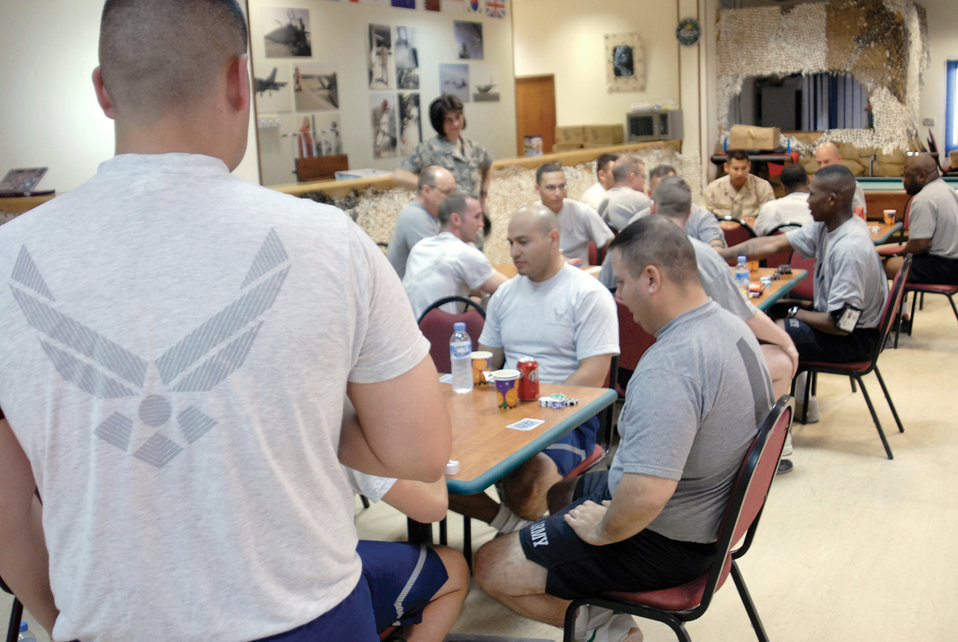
Medics, volunteers help servicemembers recover for duty

Servicemembers in the In-Theater Care Program participate in game activity March 22 at an air base in Southwest Asia. The Air Readiness Center staff and volunteers coordinate regular activities for injured servicemembers as part of the program.